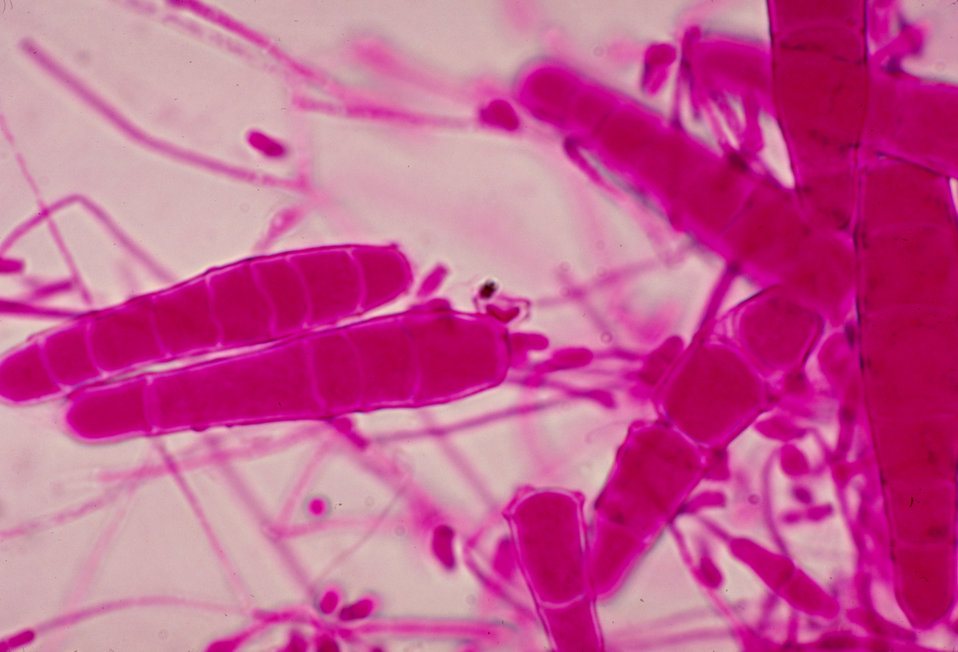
This photomicrograph depicts the microconidia of the fungus Trichophyton mariatii.